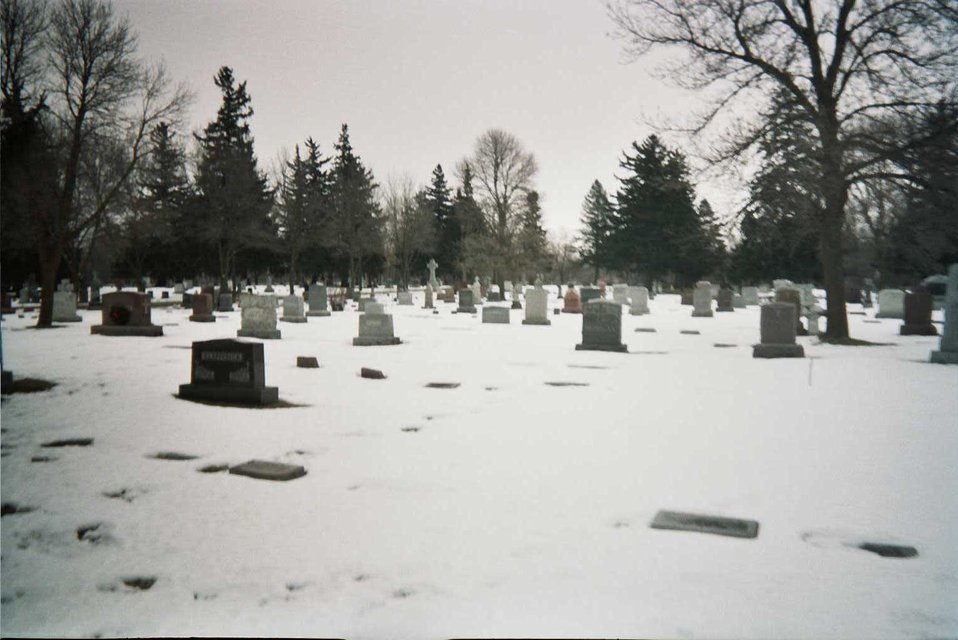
Calvary Cemetery in Austin Township, Mower County, Minnesota